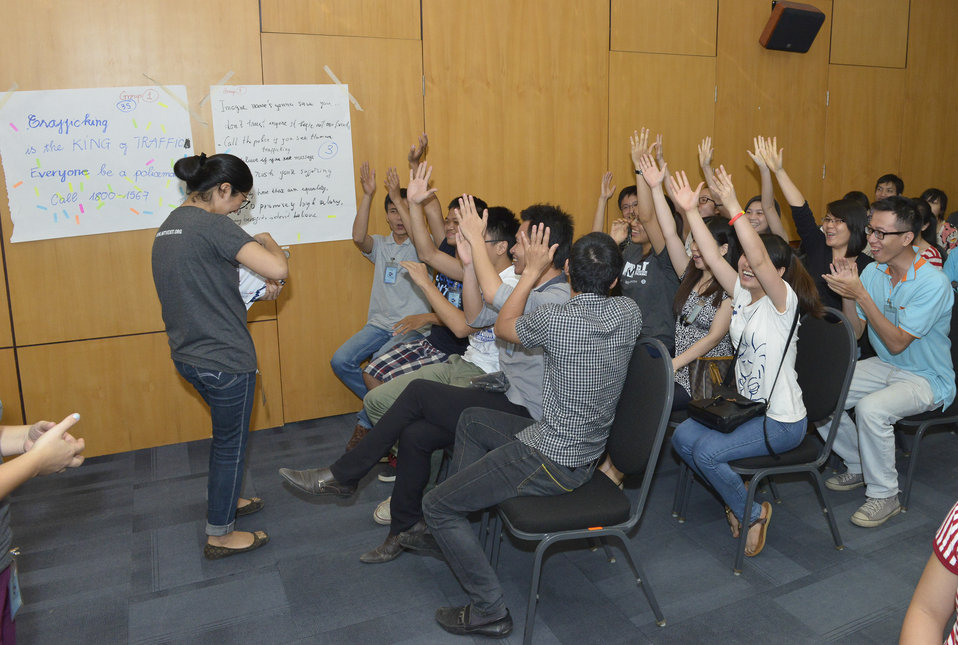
MTV Exit Talk to Engage Students in the Fight against Human Trafficking

Hanoi. June 5, 2014.